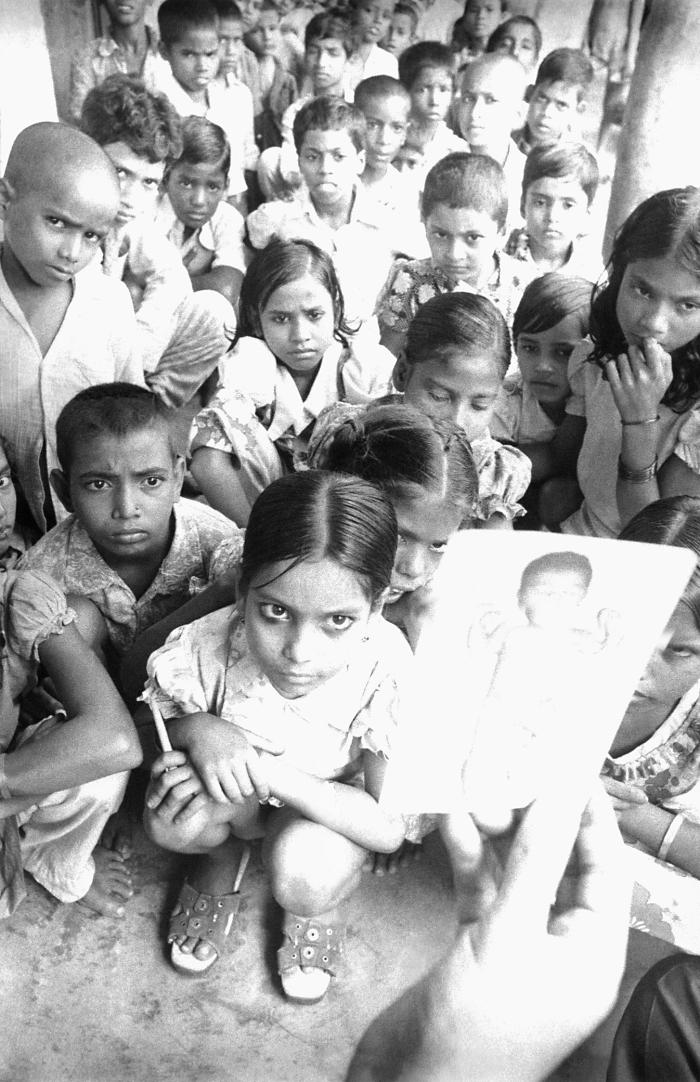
This 1975 photograph depicted an eradication team member showing school children the image of a child with smallpox, which accompanied the standard materiel handed out to villagers describing smallpox, its signs and symptoms. It was deemed quite important to discuss the disease with the community children. In fact, the last known occurring case of the illness, i.e., variola major, involving a young girl named Rahima Banu, was reported by an 8 year old girl named Bilkisunnessa.